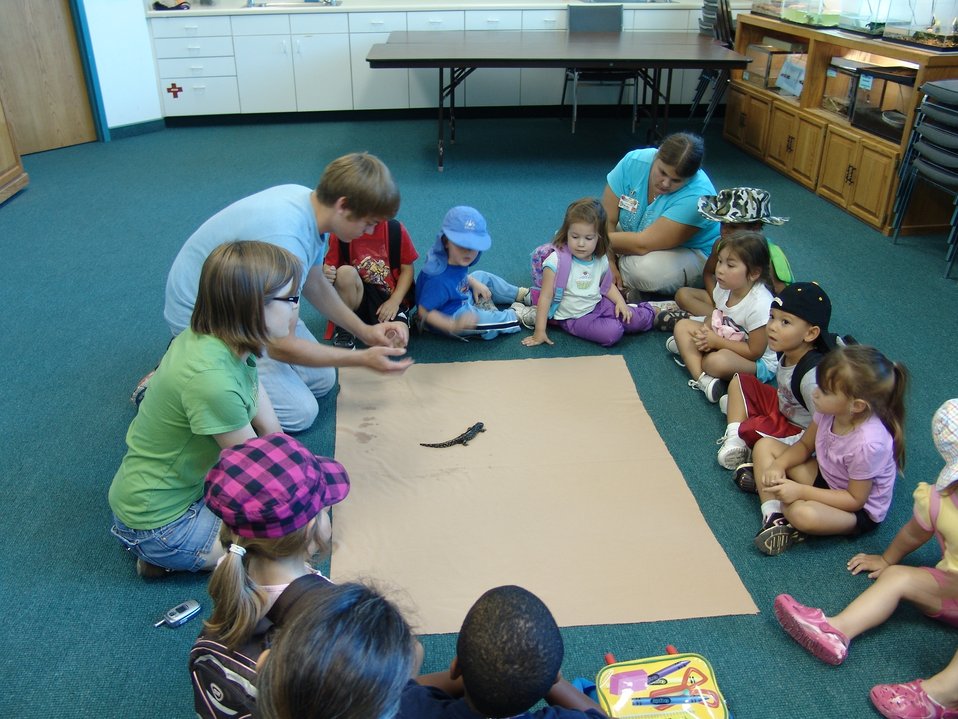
Great Plains Nature Center

A group of school children learn animal identification skills in a class at the Great Plains Nature Center.